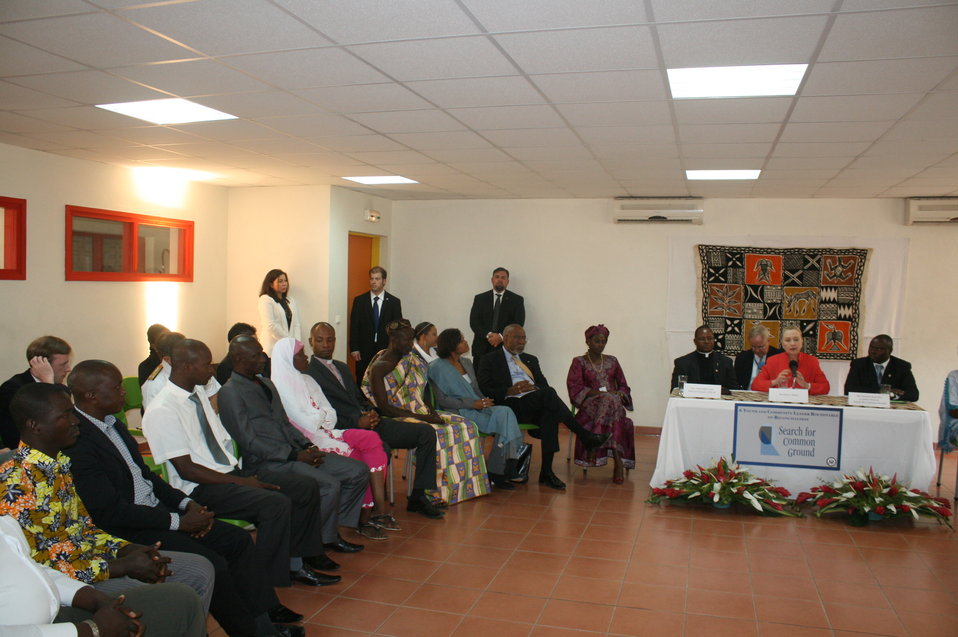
Secretary Clinton Participates in a Roundtable Discussion

U.S. Secretary of State Hillary Rodham Clinton participates in a roundtable discussion with youth and community leaders at the Center for Research and Action for Peace in Abidjan, Cote d’Ivoire, on January 17, 2012. Also pictured in the photo are: Rev. Hyacinthe Loua, Director General Centre de Recherche et d’Action pour la Paix (CERAP); Marcel; and Quentin Kanyatsi, Country Director Search for Common Ground.